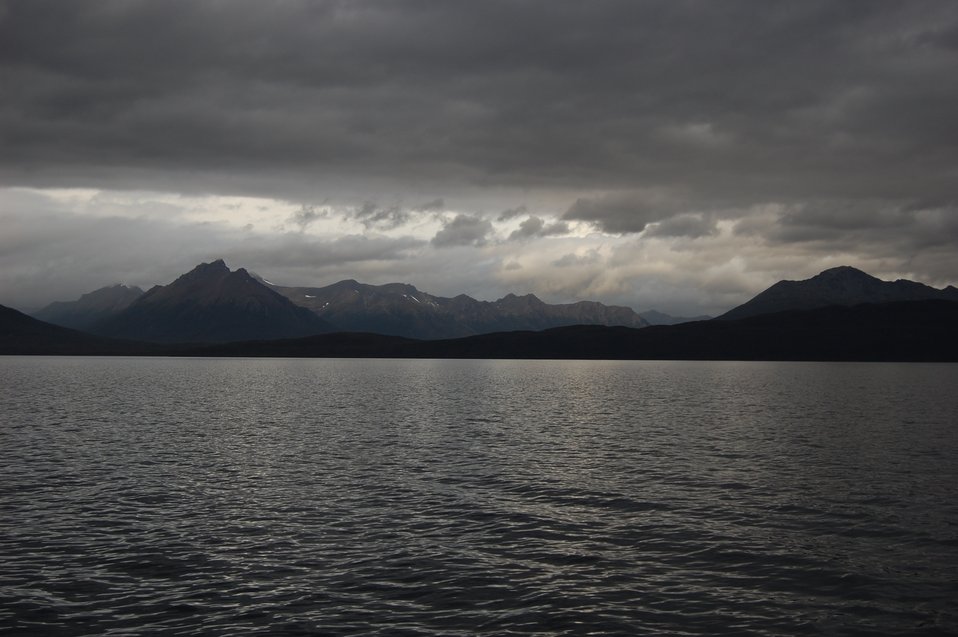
Mountains, clouds, and sunlight in the Strait of Magellan.